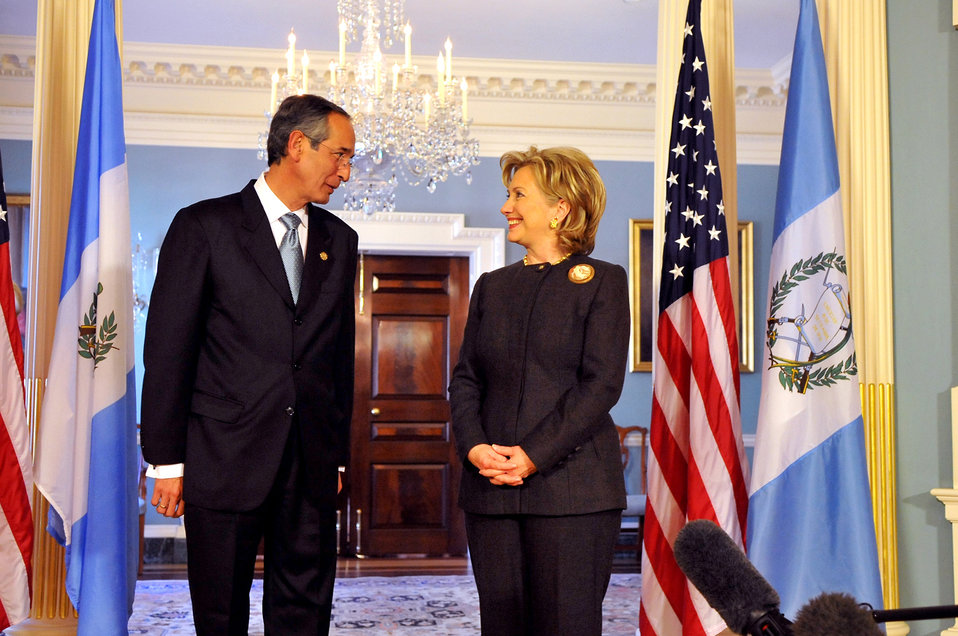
Secretary Clinton Meets With Guatemalan President

U.S. Secretary of State Hillary Rodham Clinton meets with Guatemalan President Álvaro Colom at the U.S. Department of State in Washington, DC February 18, 2010.